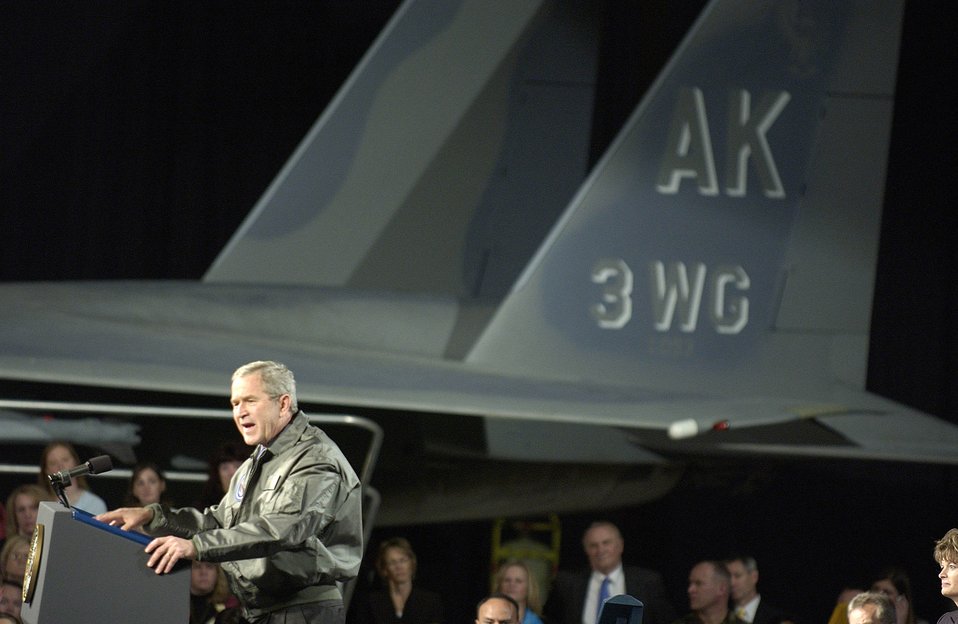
Presidential visit

ELMENDORF AIR FORCE BASE, Alaska (AFPN) -- President George W. Bush addresses more than 4,500 military and civilian members during a stop here during his trip to China for talks with the regions' economic and strategic leaders. The president spoke for nearly 45 minutes during the Nov. 14 stop.